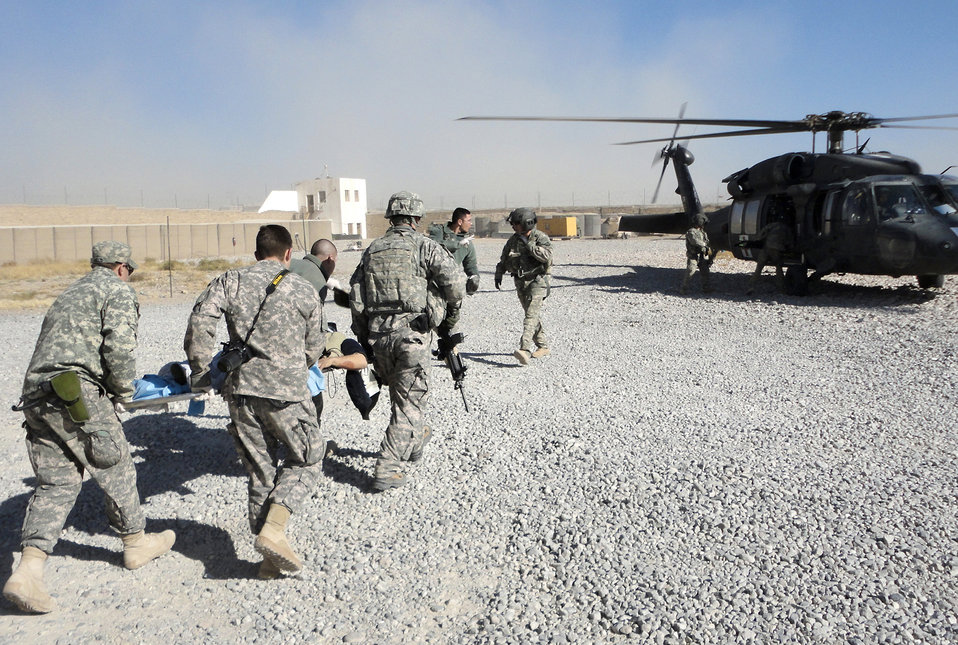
Nine medevaced from PRT Zabul after tragic accident

Airmen and Soldiers from Provincial Reconstruction Team Zabul load a patient onto a medevac helicopter after a civilian bus rolled over, leaving seven dead and more than 30 injured Nov. 30, 2010, just outside Qalat City, Afghanistan. Medical personnel from the PRT were on the scene at Zabul Provincial Hospital to assess patients and provide medical care. Nine patients with potentially life-threatening injuries were flown via helicopter from Forward Operating Base Smart to FOB Lagman, and then on to Kandahar.